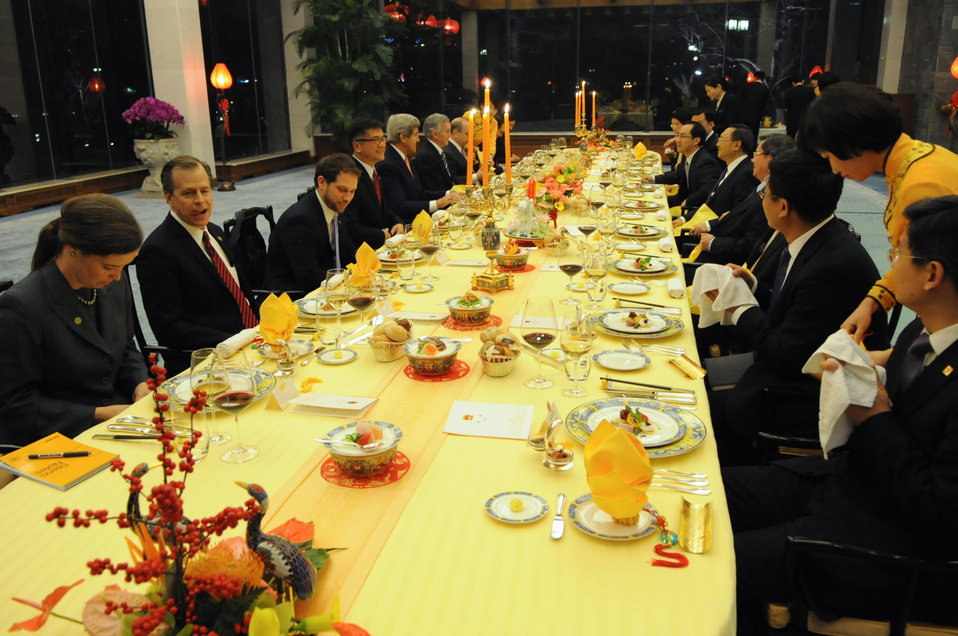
Secretary Kerry Dines With Chinese State Councilor Yang

U.S. Secretary of State John Kerry sits across from Chinese State Councilor Yang Jiechi at a dinner at the Diaoyutai State Guest House in Beijing, China on February 14, 2014.